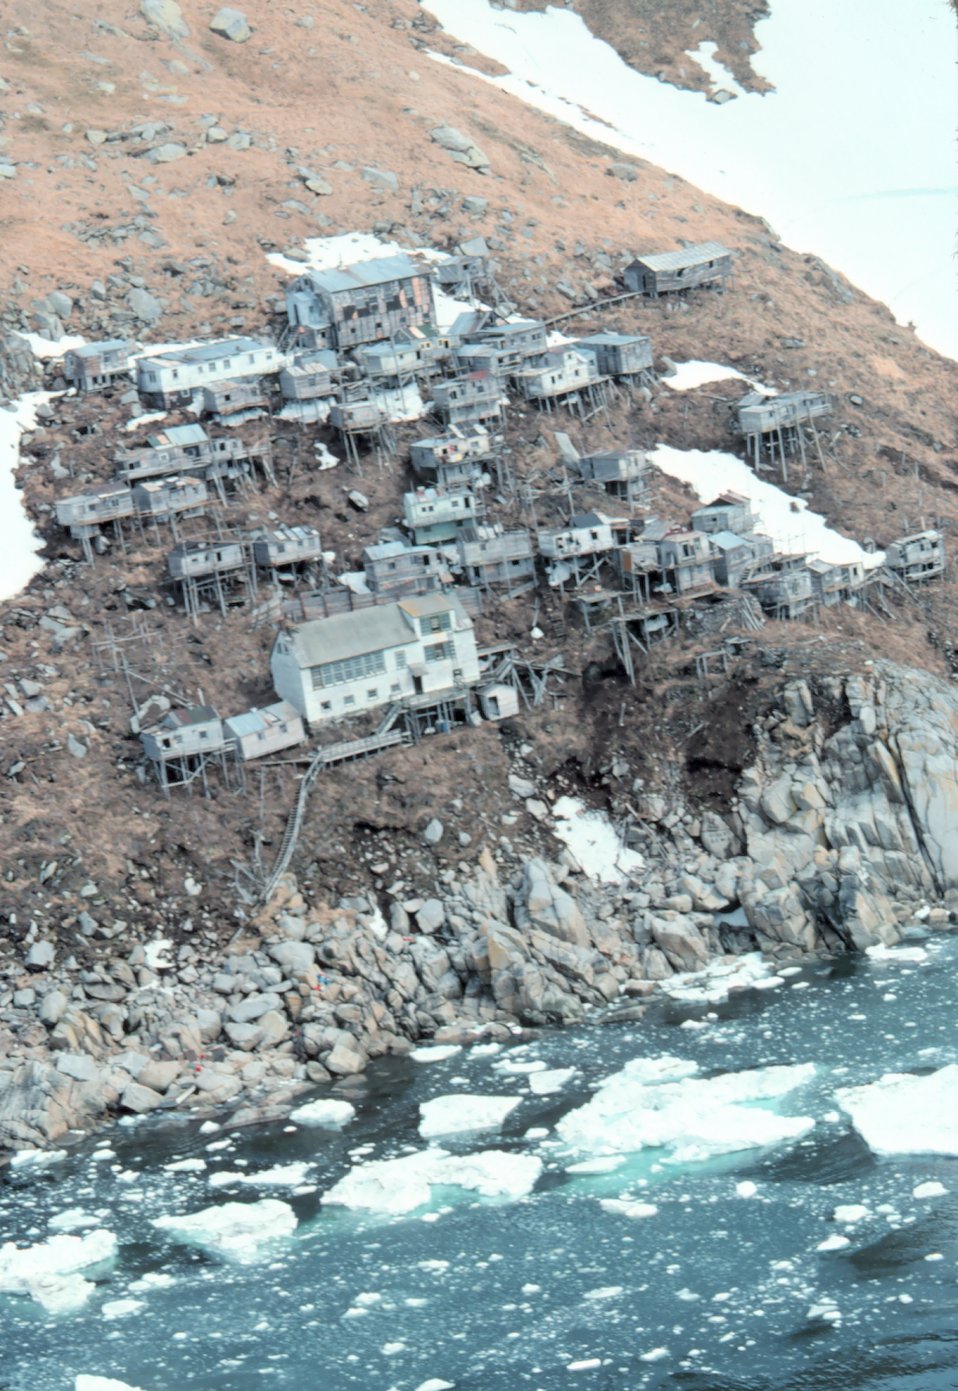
The stilt village of Ukivok - this is now deserted.